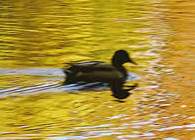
Duck Autumn